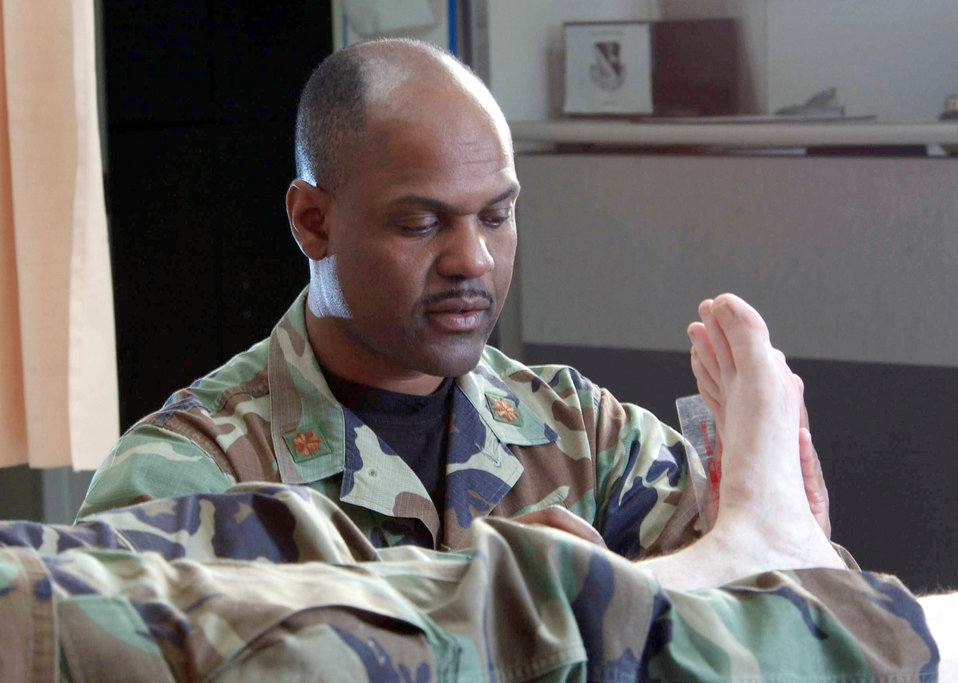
Does this tickle?

YOKOTA AIR BASE, Japan -- Maj. Raymond Bailey examines a patient's foot during rehabilitation treatment. Bailey is a physical therapist from the 374th Medical Group here. The physical therapy element provides services that help restore function, improve mobility, relieve pain and prevent or limit disabilities of thousands of patients each year.